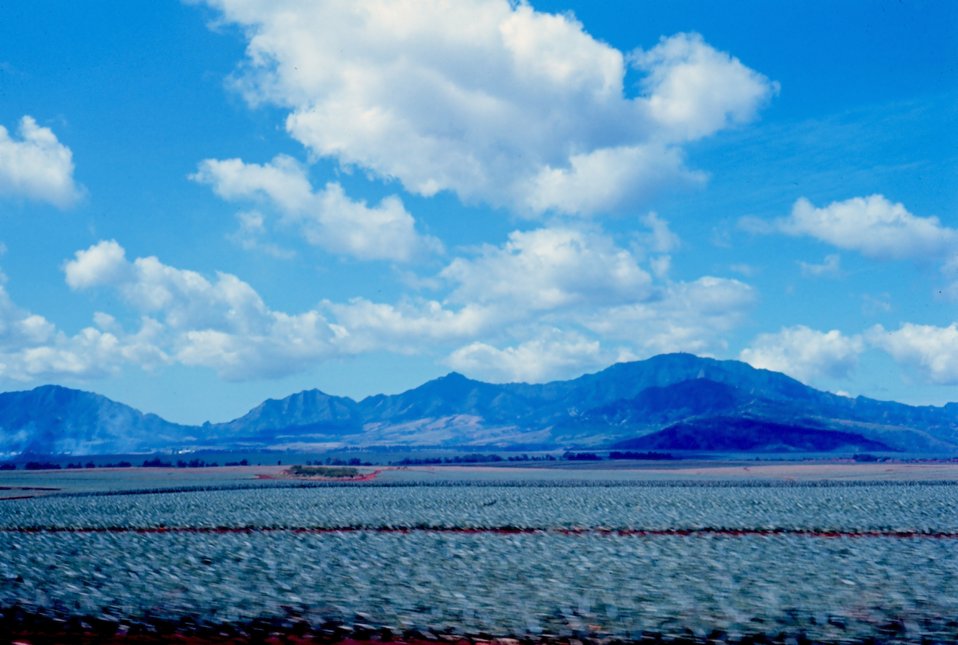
Waianae coast -southwest Oahu